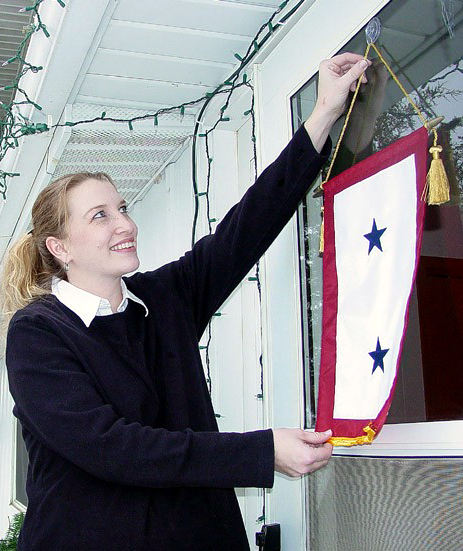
Flag Day in February

MINOT AIR FORCE BASE, N.D. -- Christa Wolfe, wife of 1st Lt. Marc Wolfe from the 741st Missile Squadron here, hangs a two-star service flag on her door. Christa's service flag honors her husband and her father, Lt. Col. Dennis McCarty, a chaplain at Little Rock Air Force Base, Ark. Service flags are hung during any period of war or hostilities in which the U.S. armed forces may be engaged. Each star represents a family member in the armed forces.